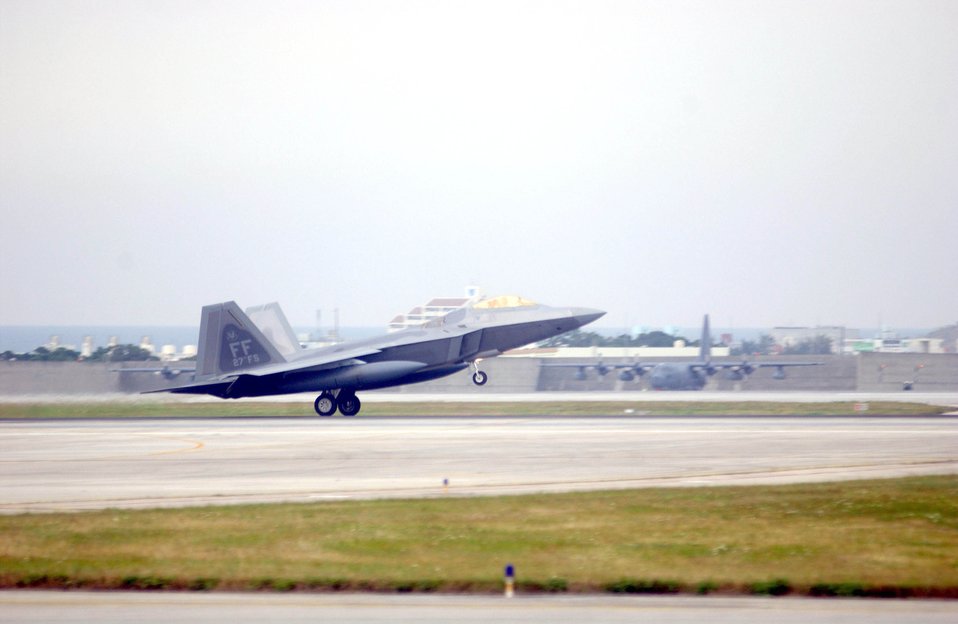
Raptors arrive at Kadena

An F-22 Raptor lands at Kadena Air Base, Japan, Feb. 18, marking the aircraft's first overseas deployment. The jet is one of 12 along with more than 250 Airmen deployed from Langley Air Force Base, Va., to Kadena as part of an air expeditionary force rotation.